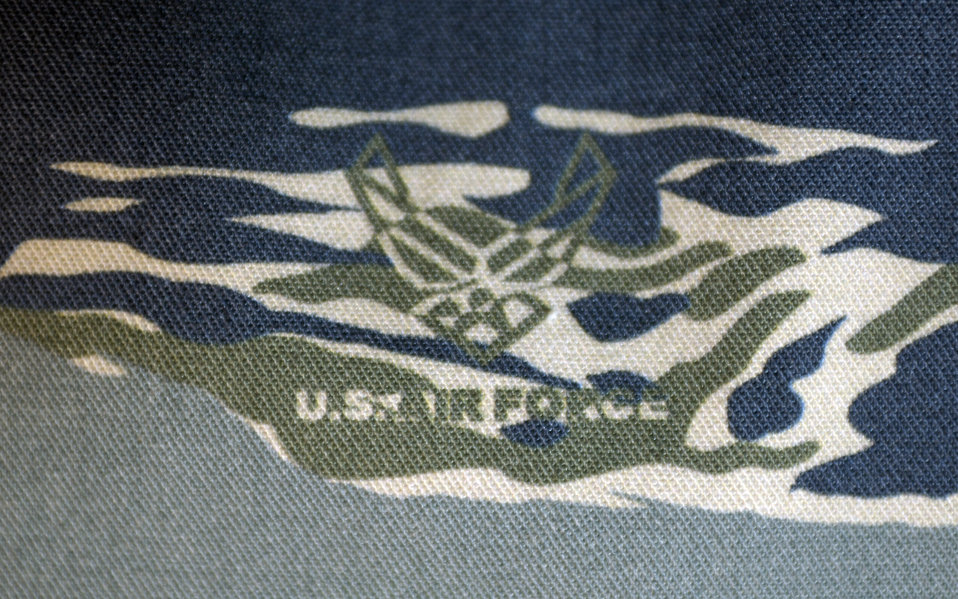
New uniform with Air Force logo

WASHINGTON (AFPN) -- The Air Force logo is interspersed throughout the new Air Force test utility uniform. The blue, gray and green tiger-stripe camouflage ensemble includes many new features intended to increase functionality while providing a distinctive look for the 21st century airmen. The uniforms will undergo wear-testing beginning in January 4. Airmen from a cross section of Air Force career fields will provide feedback on the fit, durability and functionality of the proposed ensemble which will come in men's and women's cuts.